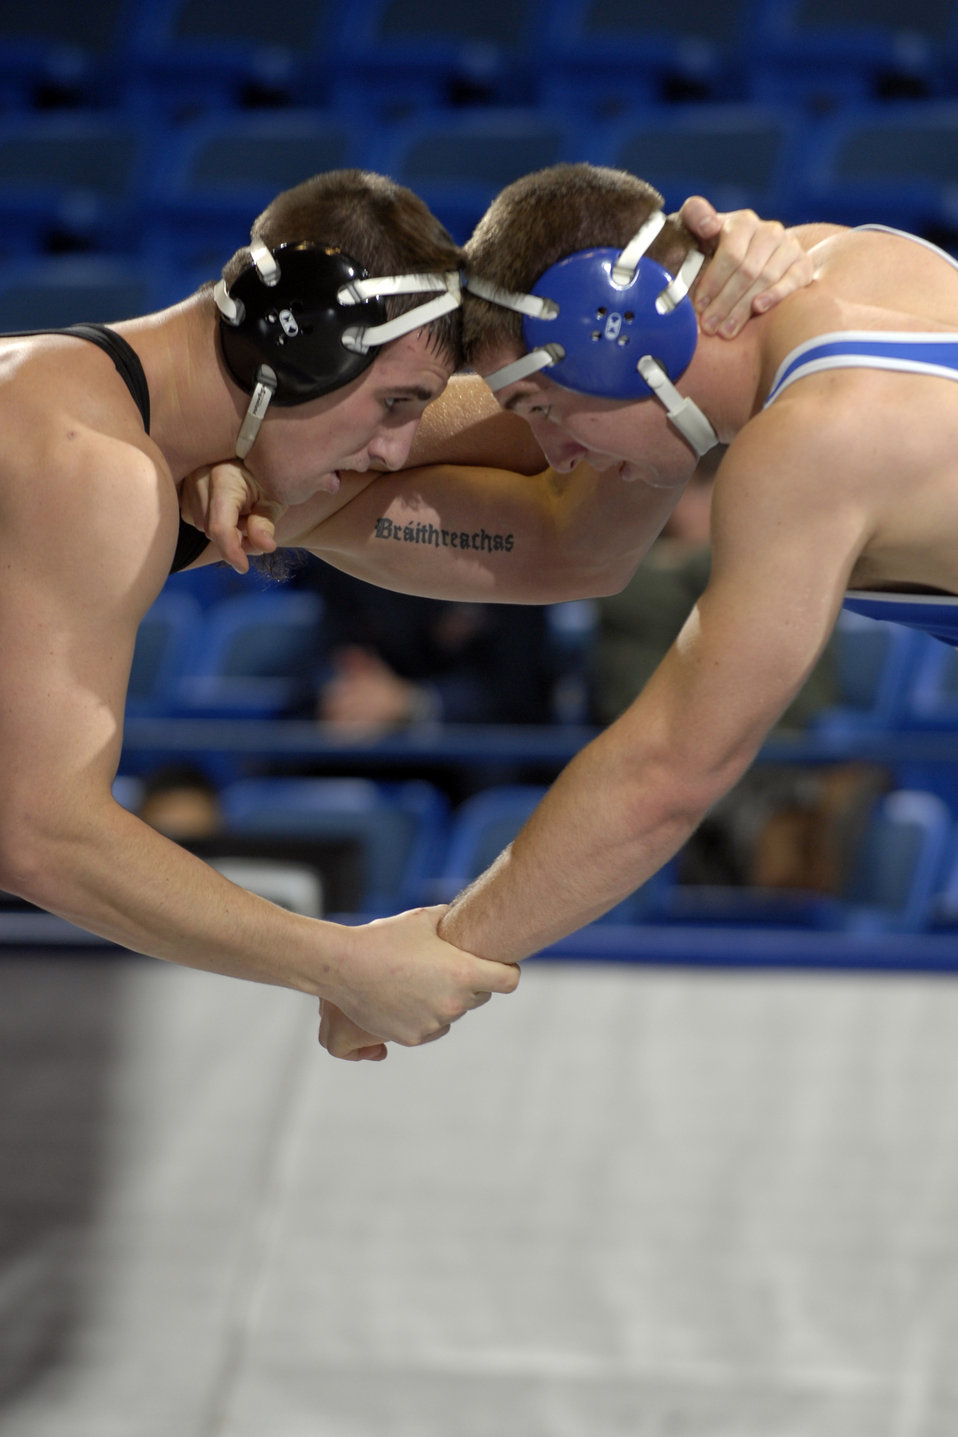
Falcons lose in first home contest

U.S. Air Force Academy junior Neil Delaney wrestles Ohio University's Erik Schuth in the 197-lb. weight class during the first home contest of the season at the Academy's Clune Arena Dec. 11, 2009. Schuth won the match 4-0, but Air Force lost the contest 35-3 against Ohio.